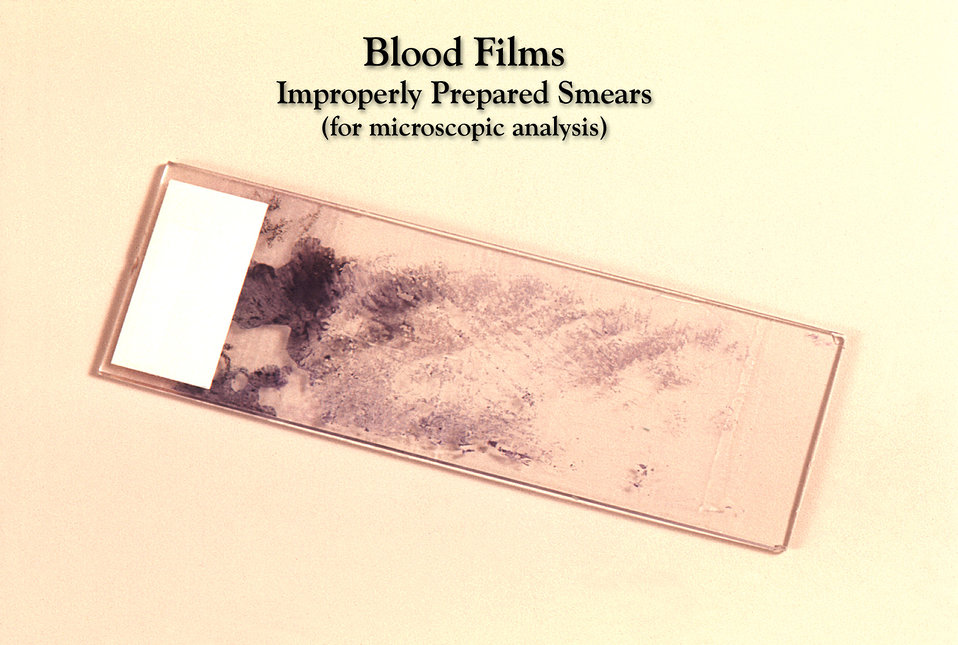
Poor film preparation technique yielded an unfavorable result in this Giemsa stained slide specimen.